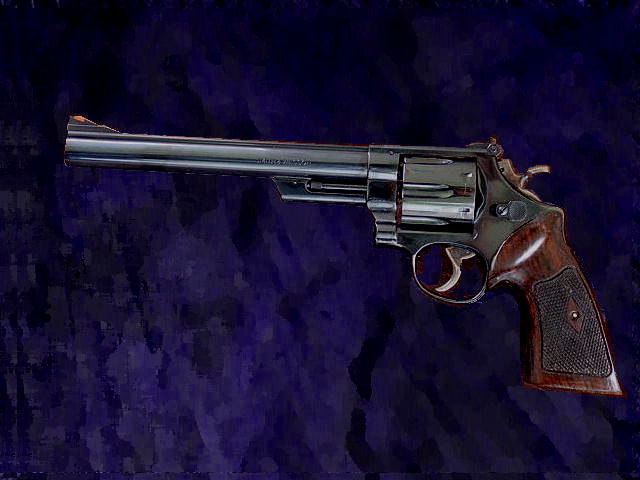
8 3/8 inch barrel 29-2